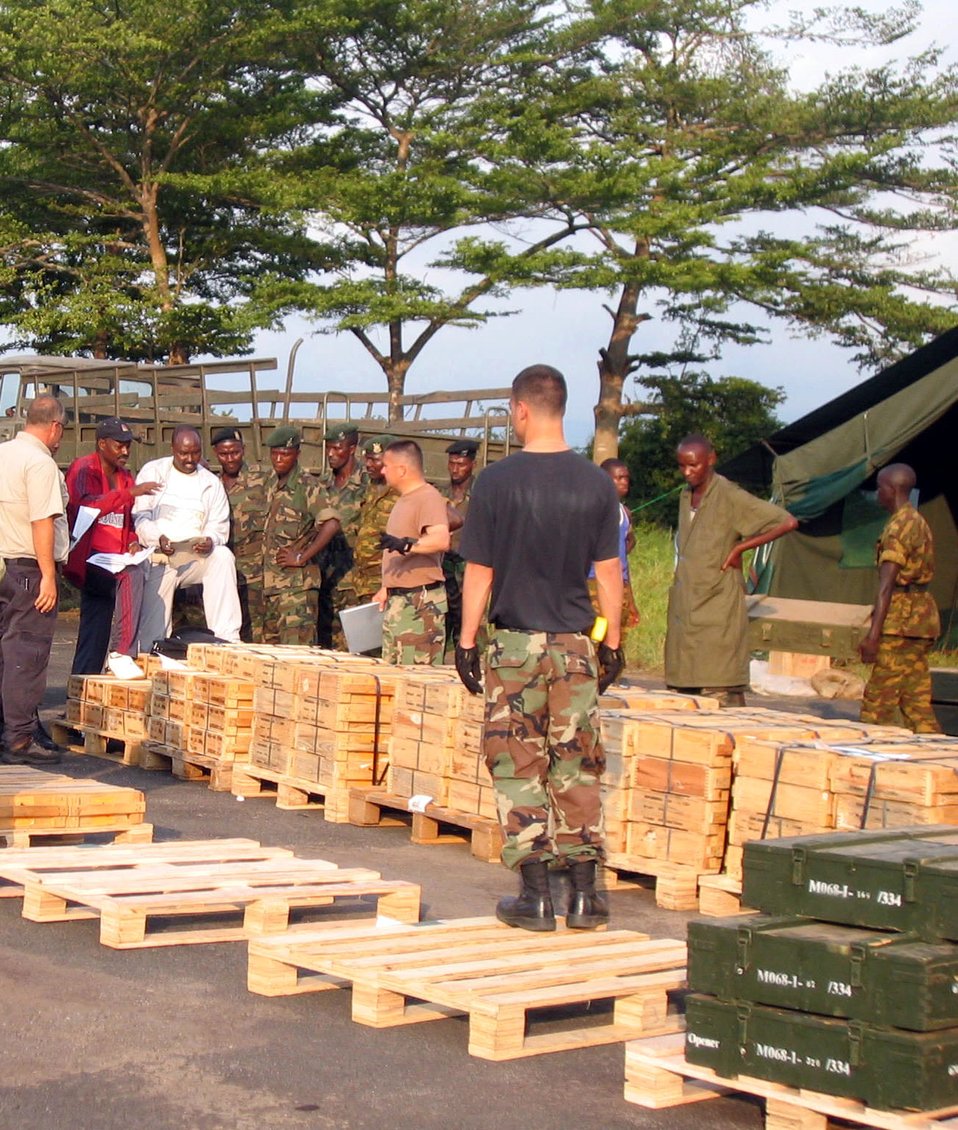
Ramstein Airmen help Burundi military deploy

Members from the 86th Contingency Response Group train Burundi troops in deployment planning, personnel and cargo preparation and processing Dec. 13 in Burundi. The 86th CRG Airmen are from Ramstein Air Base, Germany.